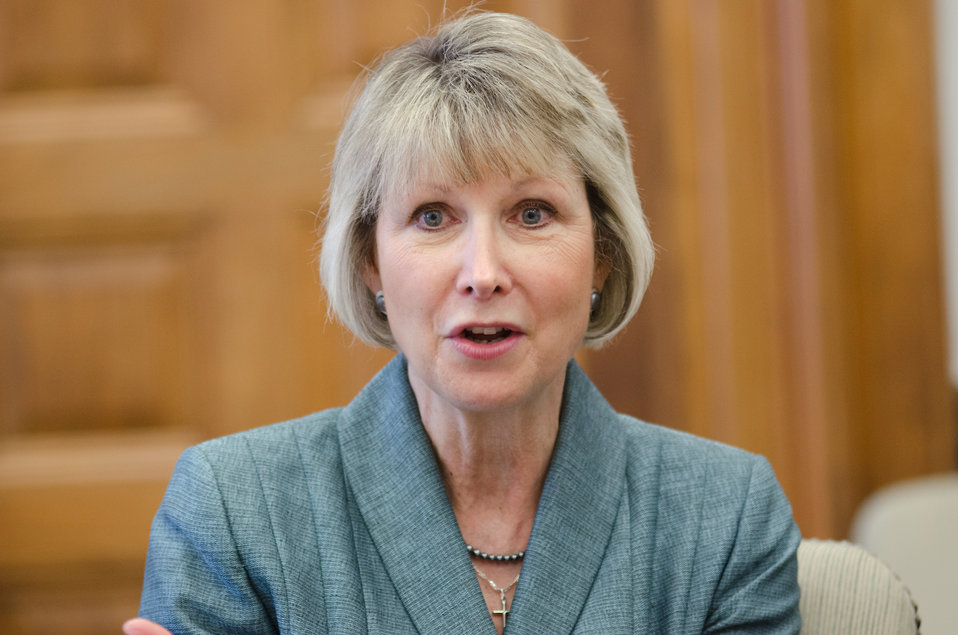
U.S. Department of Agriculture (USDA) Food, Nutrition and Consumer Services (FNCS) Special Assistant to the Under Secretary Special Brenda Lisi talks about the role she plays within the department, during a Brown Bag Lunch that Secretary Tom Vilsack periodically has with employees, in his conference room, on Tuesday, April 9, 2013, in Washington, D.C.